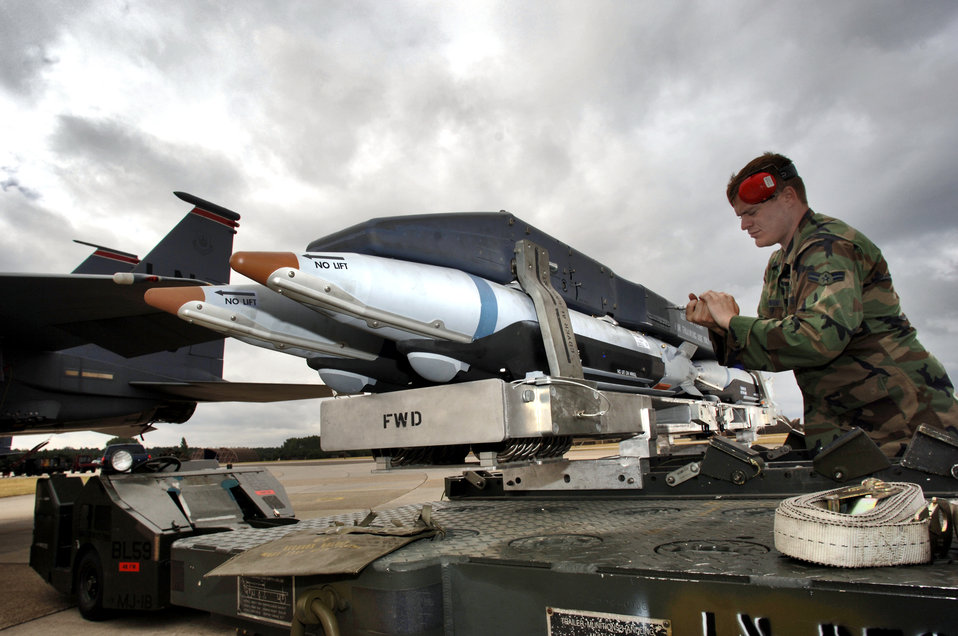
Small-diameter bomb makes Strike Eagle squadron more lethal

Airman 1st Class Robert Branham prepares a Bomb Rack Unit-61 for loading onto an F-15E Strike Eagle at Royal Air Force Lakenheath, England, on Aug. 1. The bomb rack and carrier comes loaded with Guided Bomb Unit-39 small-diameter bombs. The Airman is an aircraft weapons specialist with the 48th Aircraft Maintenance Squadron.